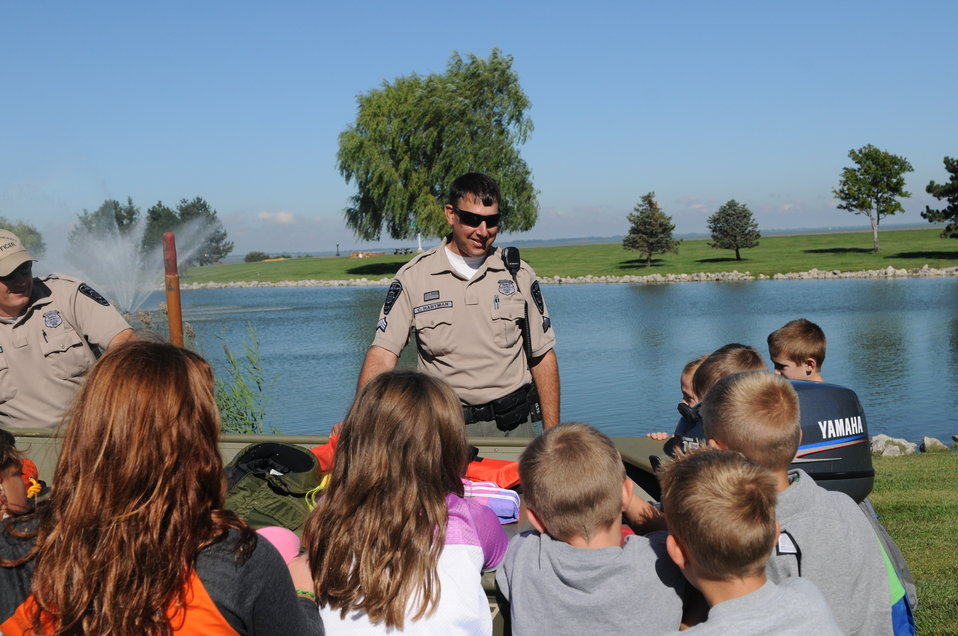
School group at Maumee Bay with Ohio DNR Division of Wildlife